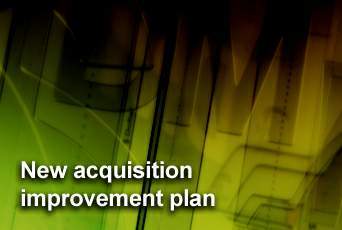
New acquisition improvement plan

Officials have announced an acquisition improvement plan designed to serve as the strategic framework to modernize and recapitalize the service's air, space and cyber systems.